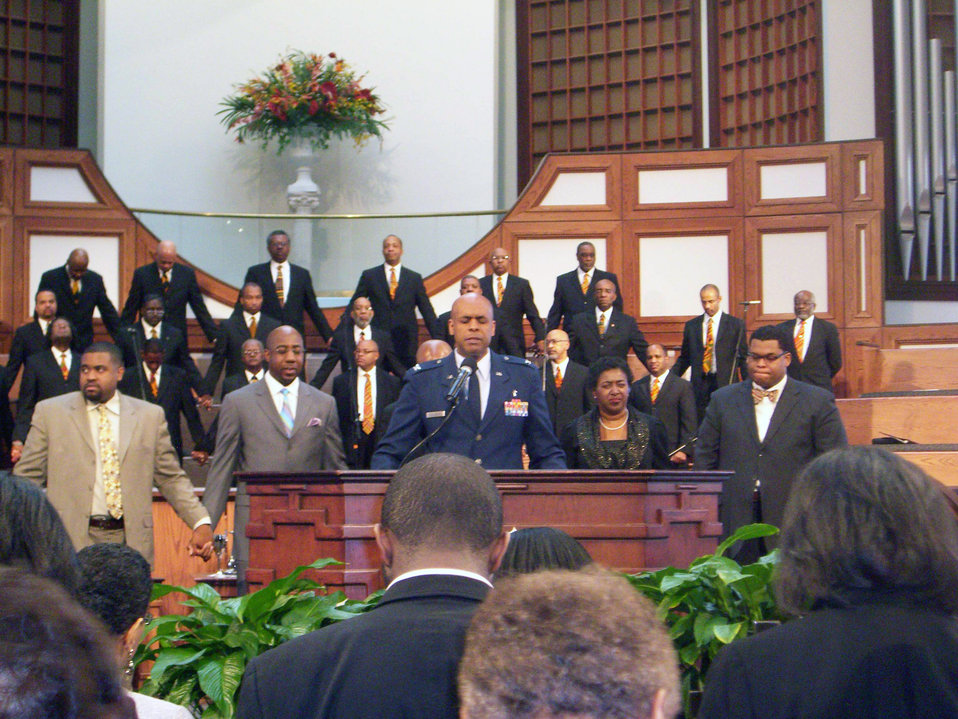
Chaplain represents Air Force at historic Atlanta church

Chaplain (Col.) Keith Darlington, leads the Ebenezer Baptist Church congregation in prayer Feb. 22 at the historic church in Atlanta. Ebenezer was the church of Dr. Martin Luther King Jr., where he delivered his ministry of nonviolence. Chaplain Darlington was part of services in recognition of Black History Month and is the senior staff chaplain at the U.S. Air Force Academy, Colo.